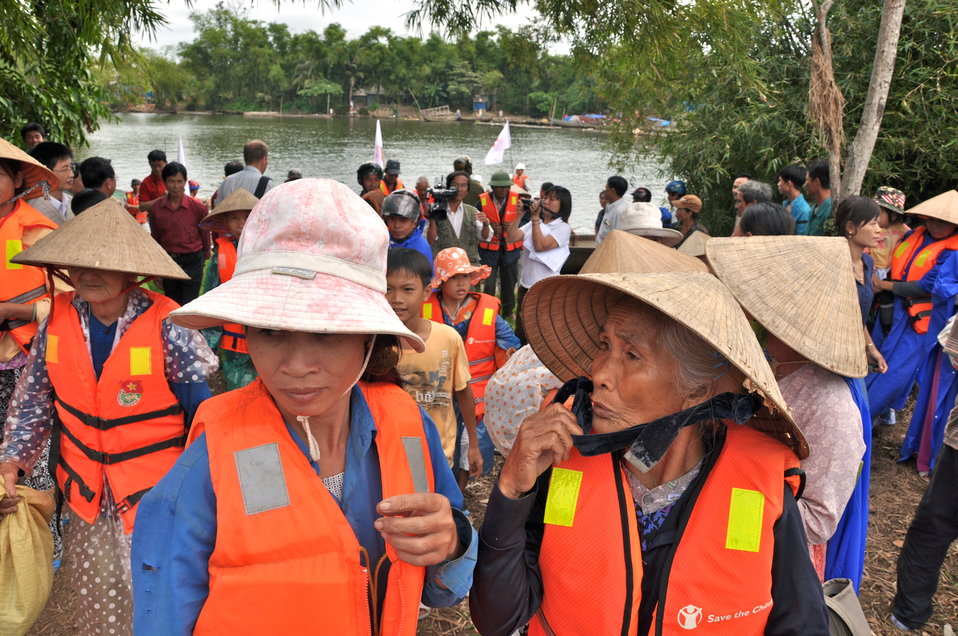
USAID and Save the Children support community evacuation drill and emergency preparedness in central Vietnam

Loc An Commune, Phu Loc District, Thua Thien Hue Province
December 4, 2012, Photo: Richard Nyberg, @USAIDVietnam